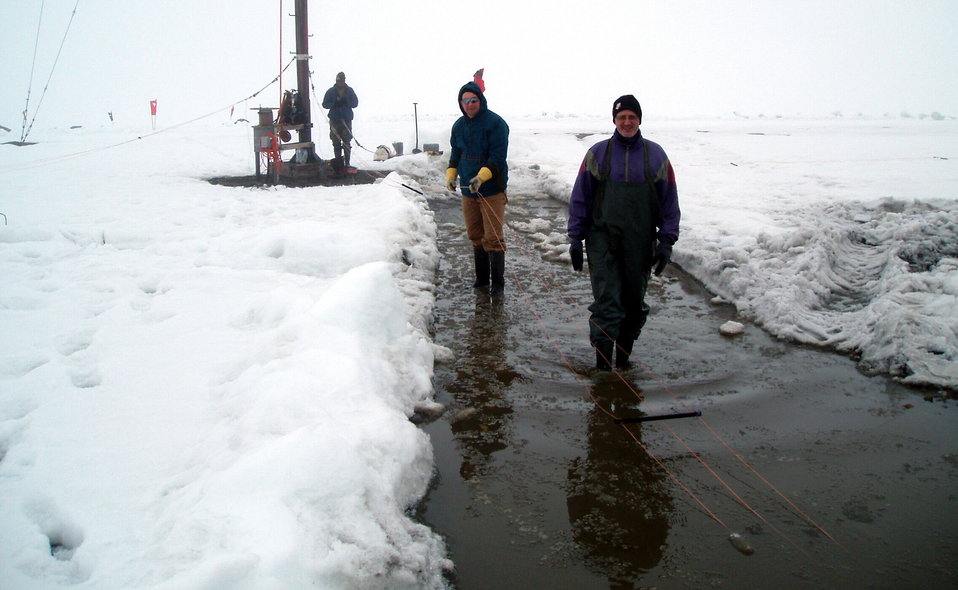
Antenna elements

Second Lt. Isseyas Mengistu (rear), 1st Lt. Robert Esposito (middle) and Jake Quinn, lay out ionosonde antenna elements on the frozen tundra at Station Nord, Greenland, prior to hoisting them up an 82-foot pole. The men, researchers with the Air Force Research Laboratory's Space Vehicles Directorate, are part of a team working to improve the capability to predict ionosphere-created disturbances in the atmosphere.